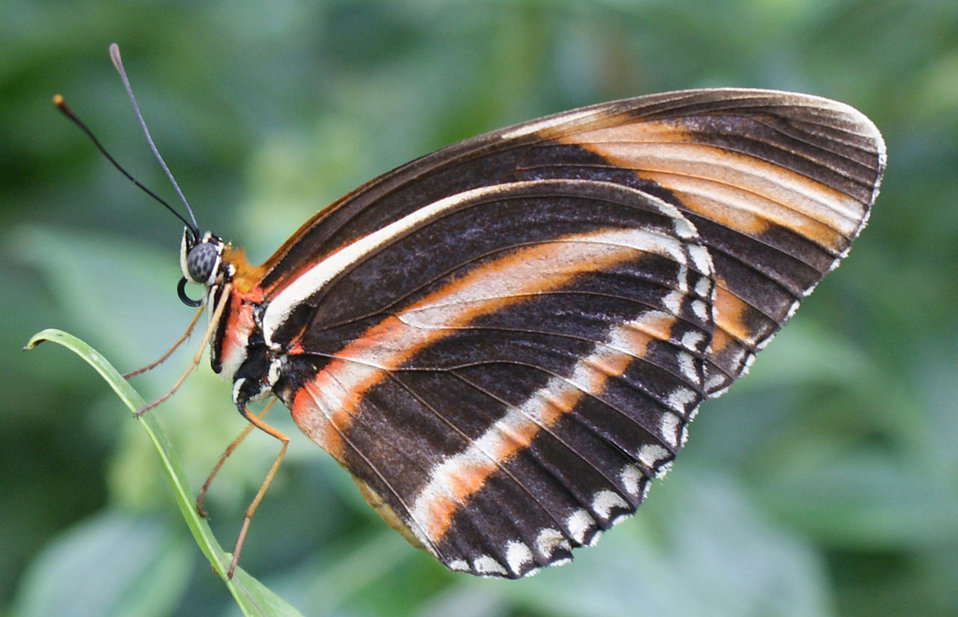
Dryadula phaetusa

Oak tiger or banded orange butterfly found from mexico to brazil..